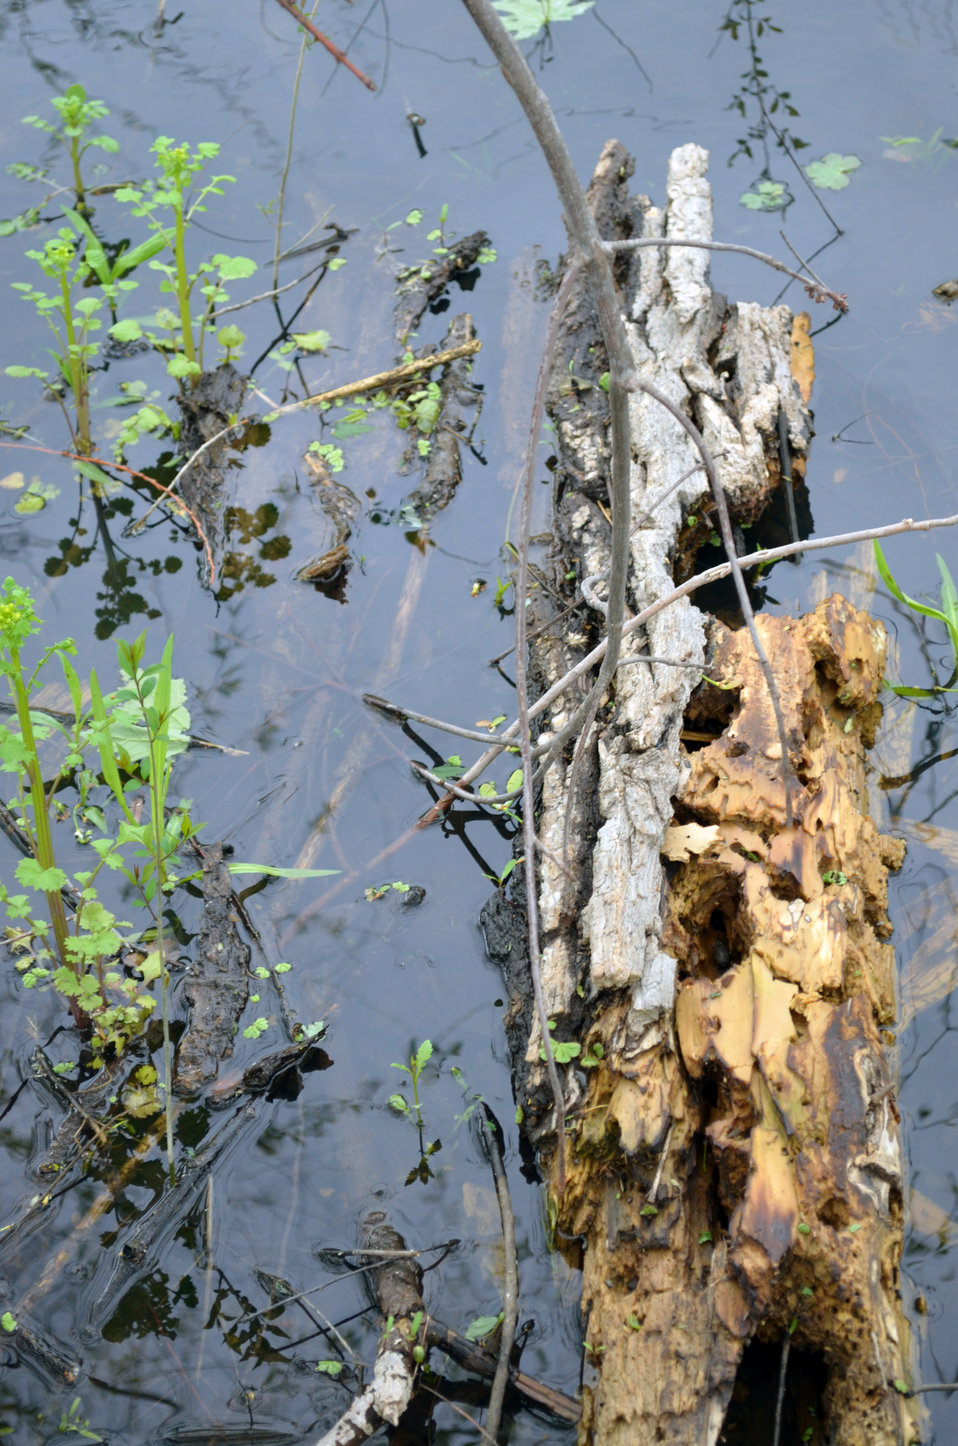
Decaying Wood